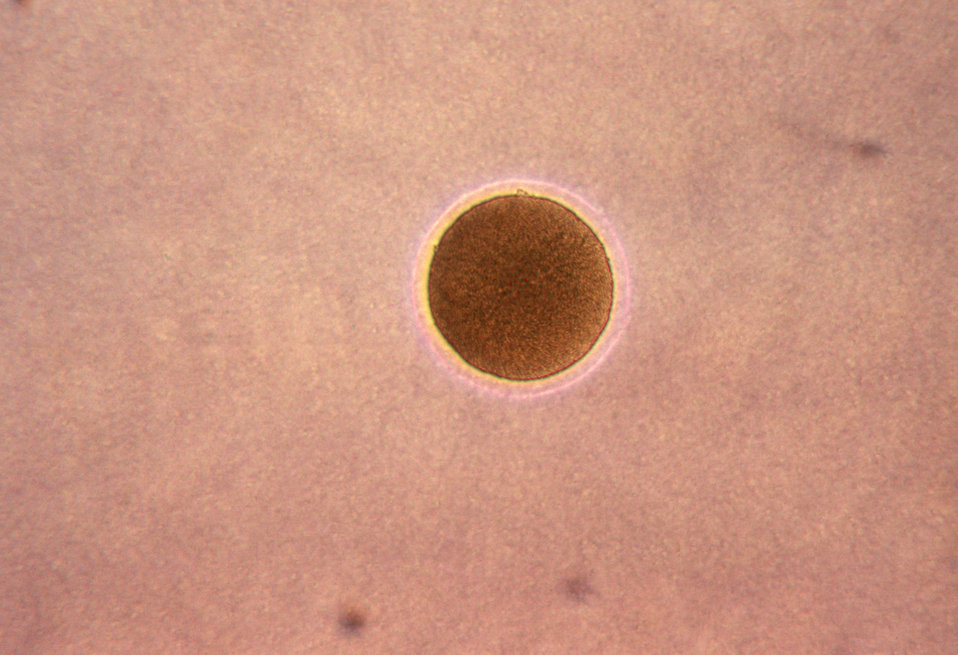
This is a photomicrograph of a T2 colony of Neisseria gonorrhoeae bacteria; Magnified 100X.